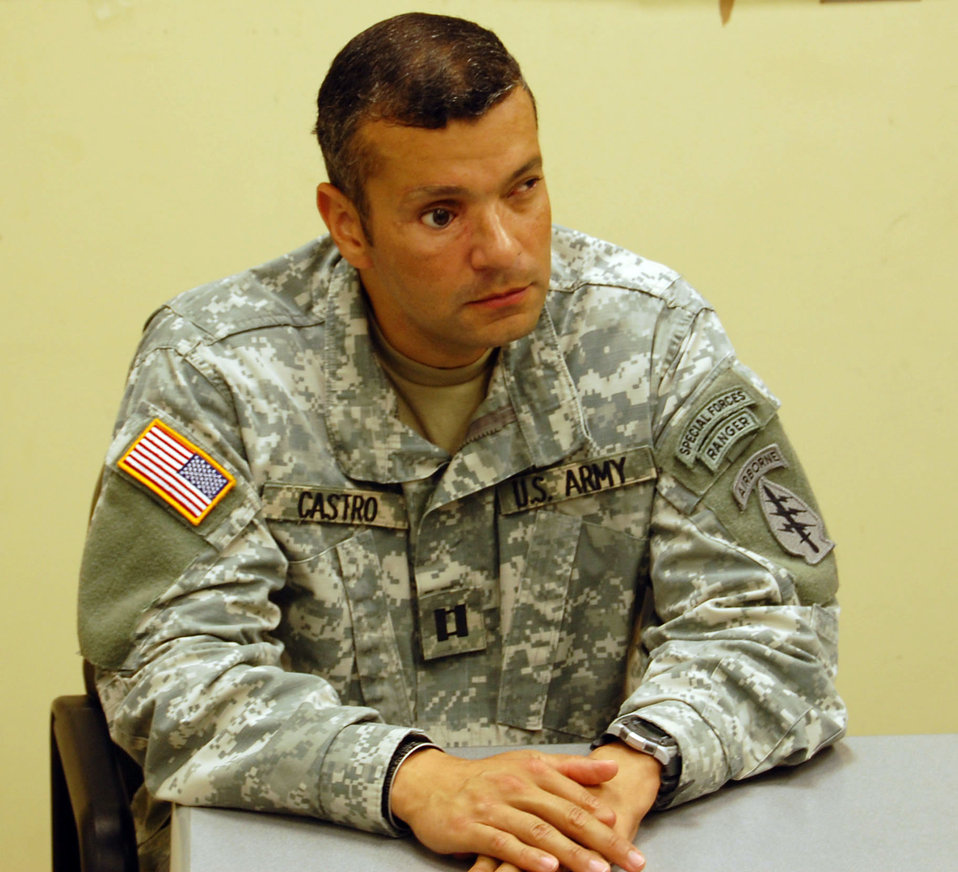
Special Forces soldier not your average USAF marathoner

Army Capt. Ivan Castro plans to participate in the upcoming U.S. Air Force Marathon. He will run tethered to his